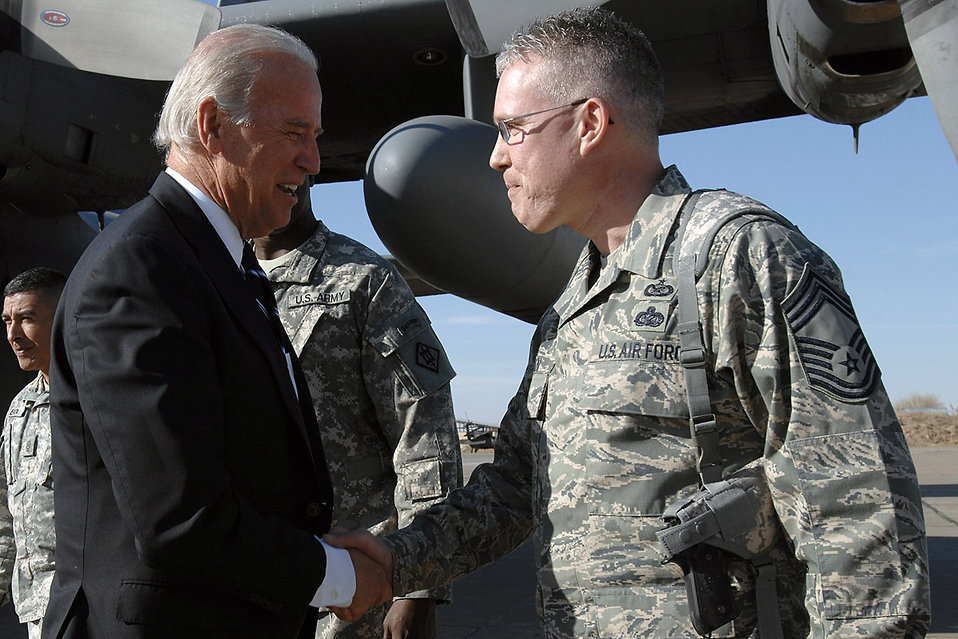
Kirkuk servicemembers host vice president-elect

Chief Master Sgt. Bill Goben greets Vice President-elect Joe Biden upon his arrival Jan. 13 to Kirkuk Air Base, Iraq. Chief Goben is the 506th Air Expeditionary Group superintendent and is deployed here from the Pentagon.